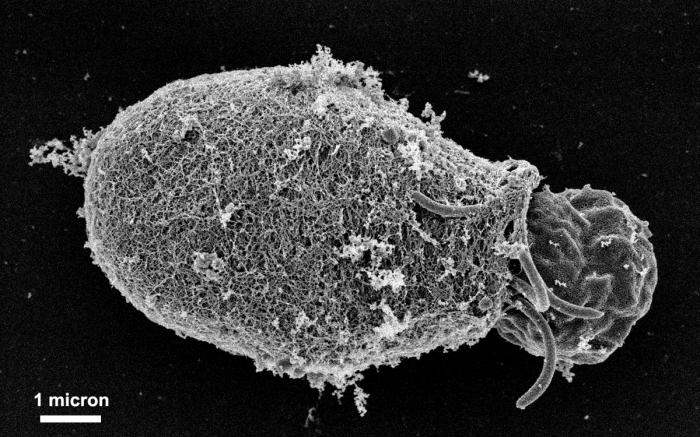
This scanning electron micrograph (SEM) depicted some of the ultrastructural morphologic details of an oblong-shaped Giardia sp. protozoan cyst, revealing the filamentous nature of the cyst wall. Each cyst-wall filament is approximately 7 to 20 nanometers (nm) thick. Note that this cyst was undergoing "excystation", and was captured at a point in the process where a flagellated trophozoite was beginning to emerge from the right side of the cyst.